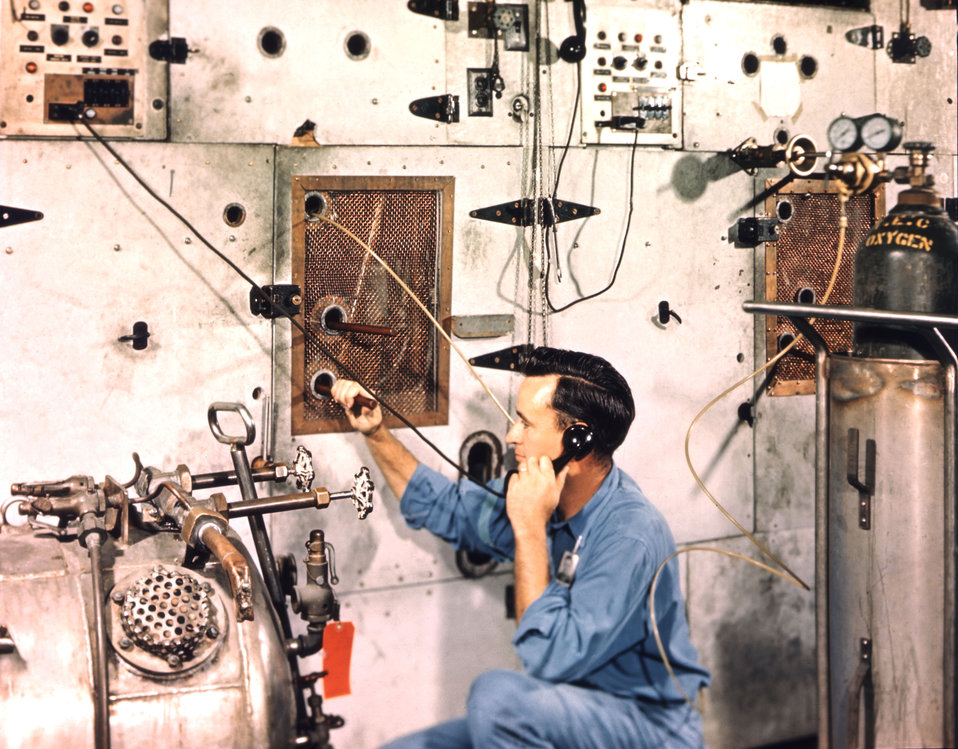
Isotope Storage Area Oak Ridge

58-1217c DOE photo Ed Westcott 1958 Oak Ridge